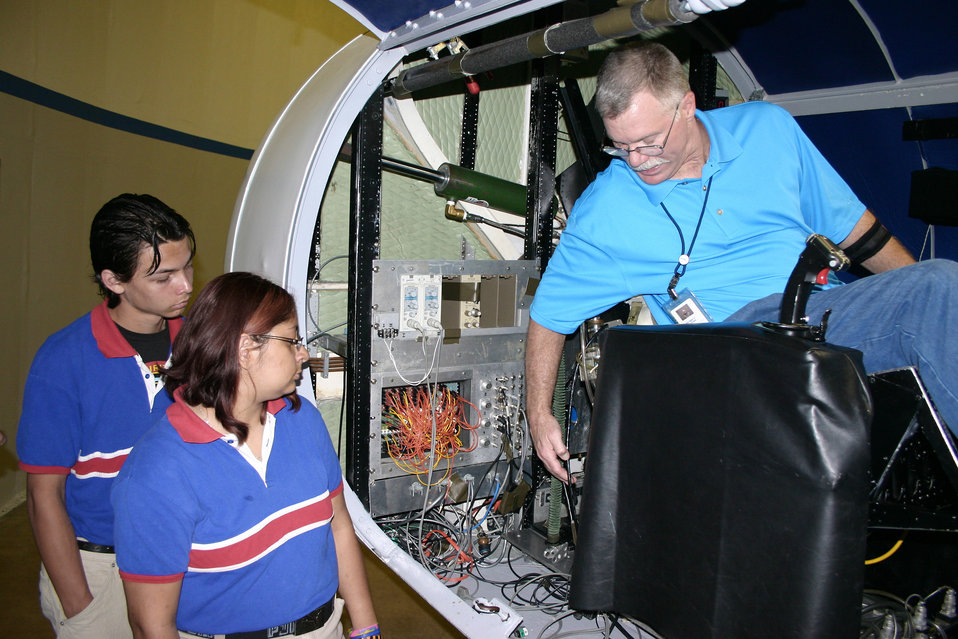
Harmony Science Academy tour

Mac Baker, a senior centrifuge technician at Brooks City-Base, Texas, demonstrates to Harmony Science Academy students the proper procedures for hooking test pilots up to a centrifuge canopy. Centrifuge training runs tests the ability of pilots to perform anti-G straining maneuvers while under extreme stress.